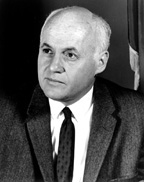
Eugene M. Zuckert

1960's -- Eugene M. Zuckert was the seventh secretary of the Air Force from Jan. 23, 1961 to Sept. 30, 1965.